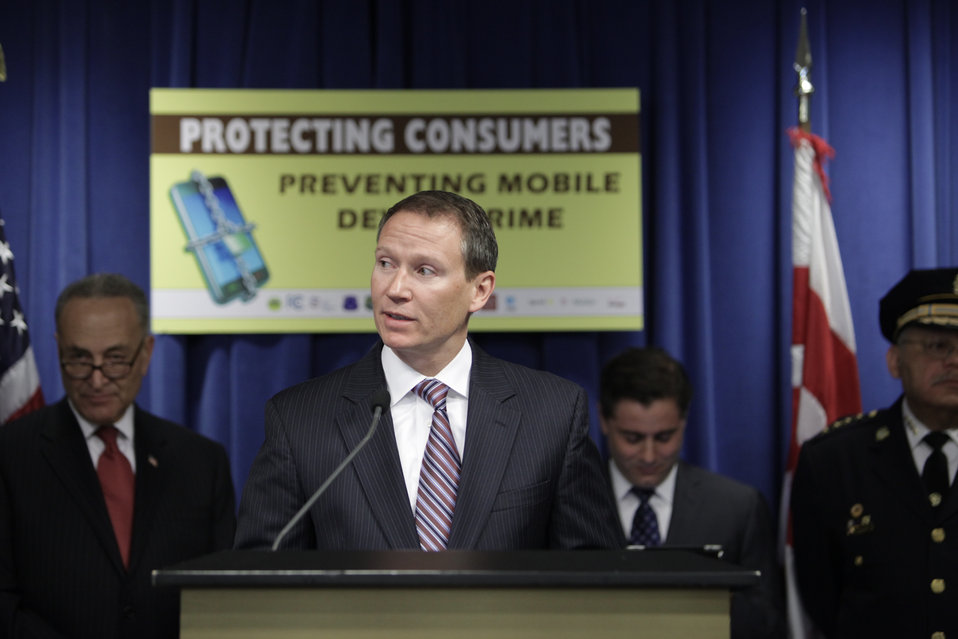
Vice President Christopher Guttman-McCabe of the Regulatory Affairs, CTIA speaks in support of the new initiatives to protect consumers at the John A. Wilson Building in Washington, DC on April 10, 2012.